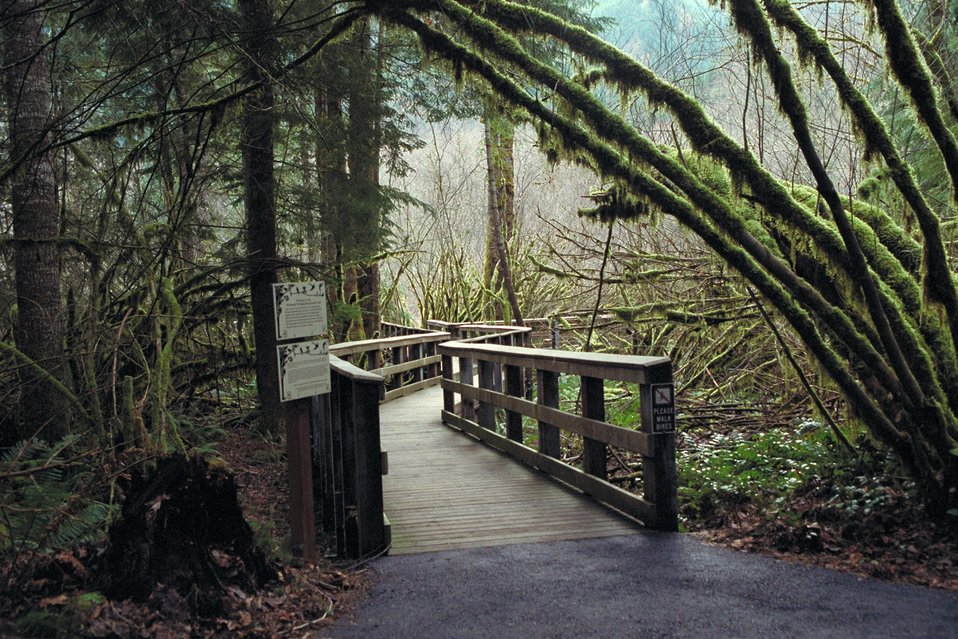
Cascade Stream Watch is an environmental education program conducted at BLM's Wildwood Recreation site.